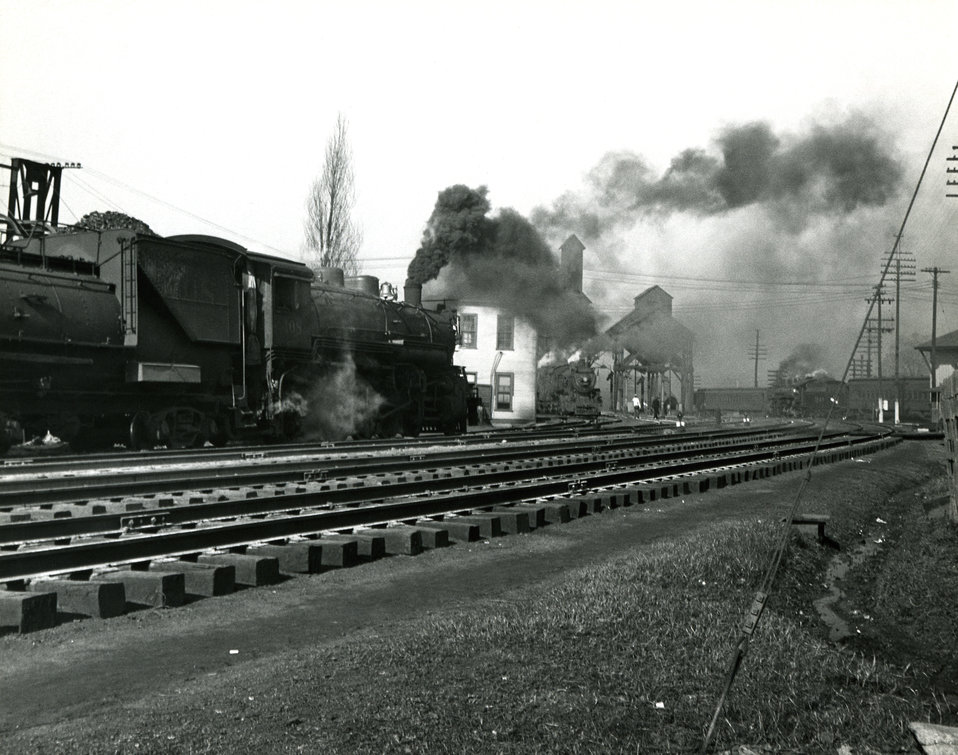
Provided by the Center for Disease Control's (CDC), National Institute for Occupational Safety and Health (NIOSH), this historic 1943 image depicted a North Carolina railyard, and a train emitting billowing black smoke from its engine. Today, such pollutants are more stringently regulated through the implementation of technologic advancements, thereby, reducing the toxification of the environment on a global scale.